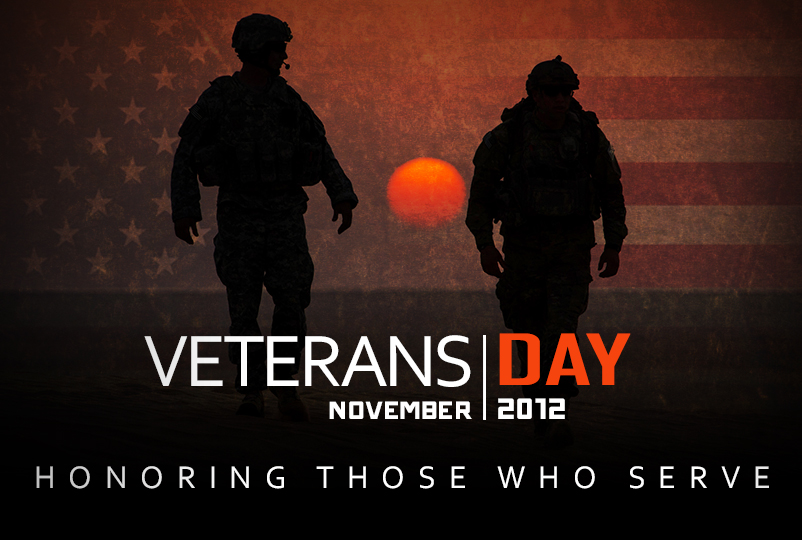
Veterans Day